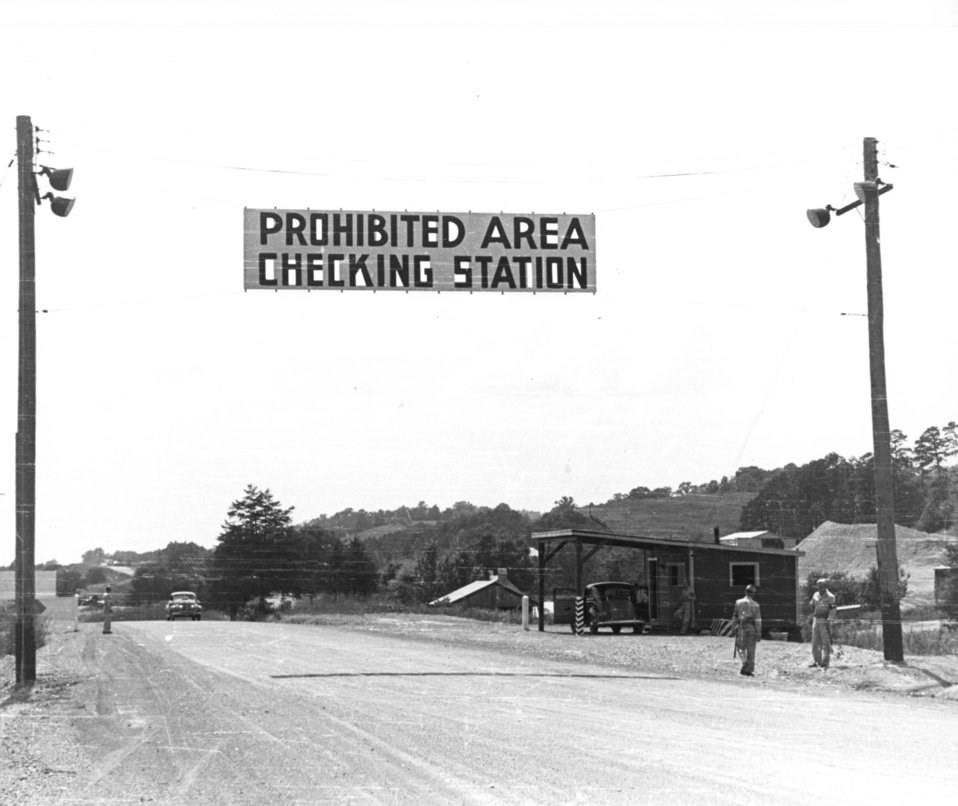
Security at Oak Ridge